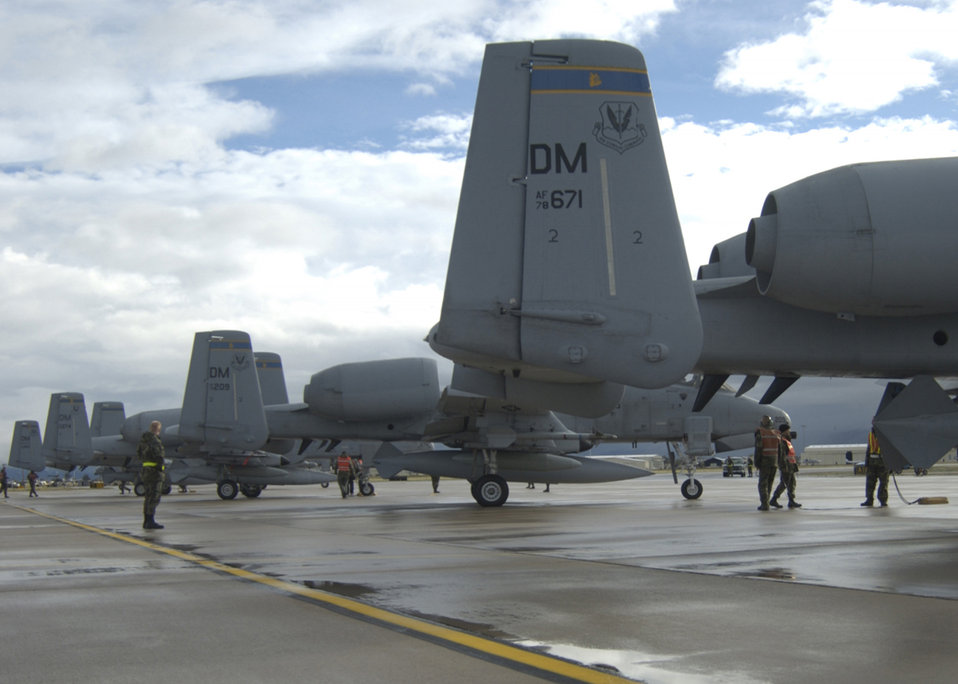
Check it 'n' bolt

DAVIS-MONTHAN AIR FORCE BASE, Ariz. -- Airmen of the 355th Aircraft Maintenance Squadron prepare A-10 Thunderbolt IIs for an exercise mission Feb. 12.